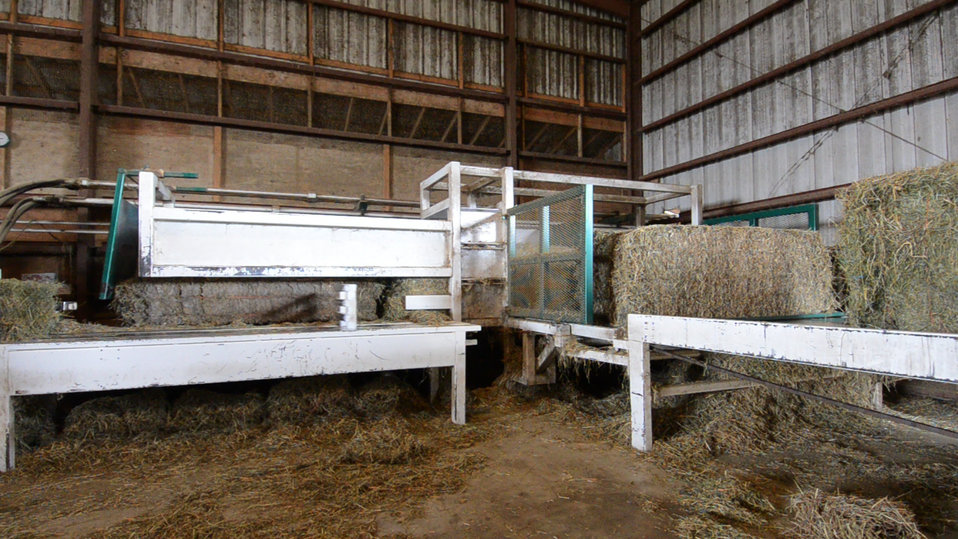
Uncompressed hay bales are fed into the compactor at Heidel Hollow Farms, on Wednesday, April 20, 2011. A family owned farm since 1852 is a 1,800 acre operation in Germansville, PA. Led by David Fink, President of Heidel Hollow Farms, they mainly produce and compact hay for export and grow produce on 300 acres for local sale. With the financial help of the U.S. Department of Agriculture (USDA) an 896 panel solar array was recently installed on non farmable diversion ditches. Rated at 200 kilowatts, they project 240 megawatts of electricity to be produced each year, providing up to 70% of the farms electrical needs. Additionally, USDA financial assistance made it possible to replace the hay compactor’s diesel engines with clean low-maintenance, low operating cost electric motors to power the compactor's hydraulic system. The compactor increases the density of baled hay by two and half times for more efficient shipping to overseas customers.